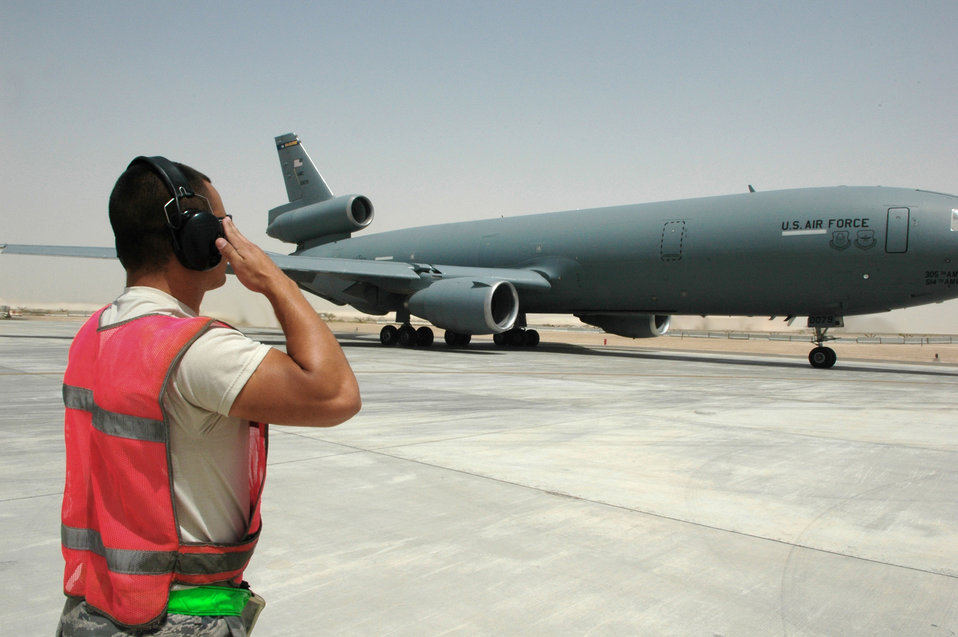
KC-10 in Southwest Asia

Airman 1st Class Gene Meredith prepares for the launch of a KC-10 Extender May 18, 2011, in Southwest Asia. Airman Meredith is a crew chief assigned to the 380th Expeditionary Aircraft Maintenance Squadron.